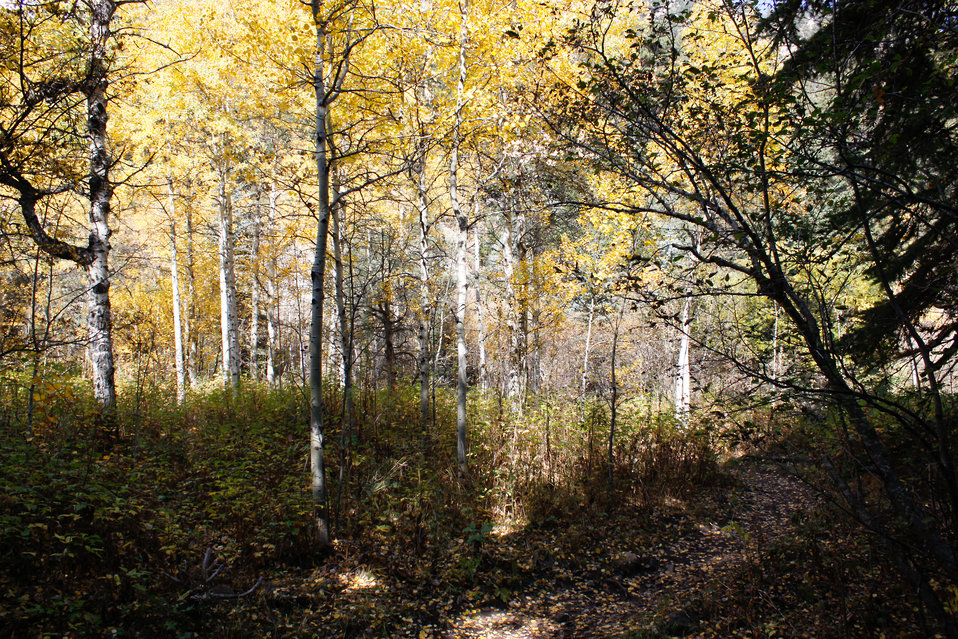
Yellow aspens line Lion Gulch Trail near Estes Park, CO, on the Canyon Lakes Ranger District, Roosevelt National Forest in north-central Colorado.